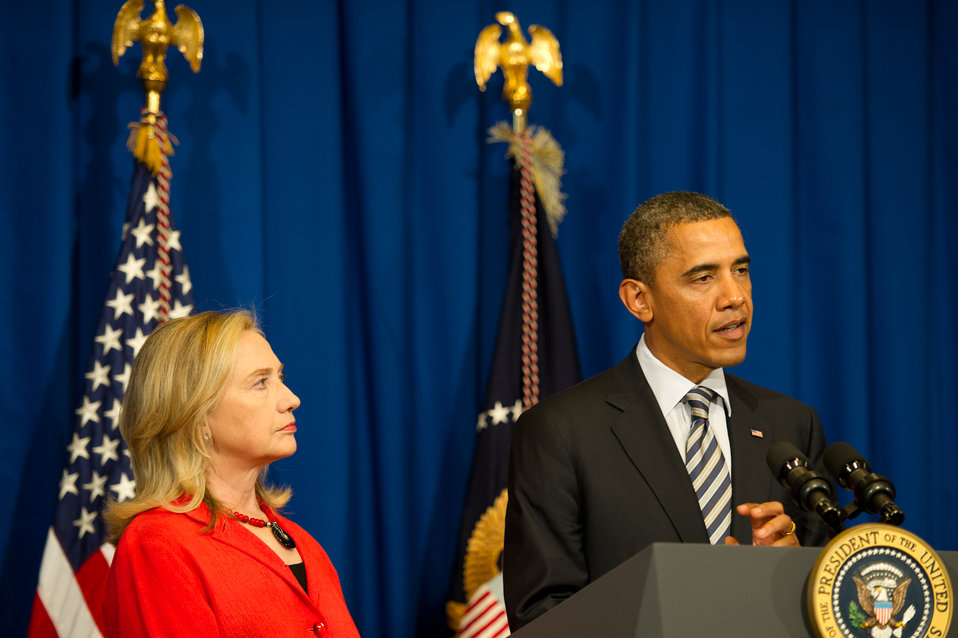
President Obama Announces He Will Send Secretary Clinton to Burma

President Barack Obama, right, announces that he will send U.S. Secretary of State Hillary Clinton, left, to Burma, during the ASEAN Summit in Bali, Indonesia, on November 18, 2011.